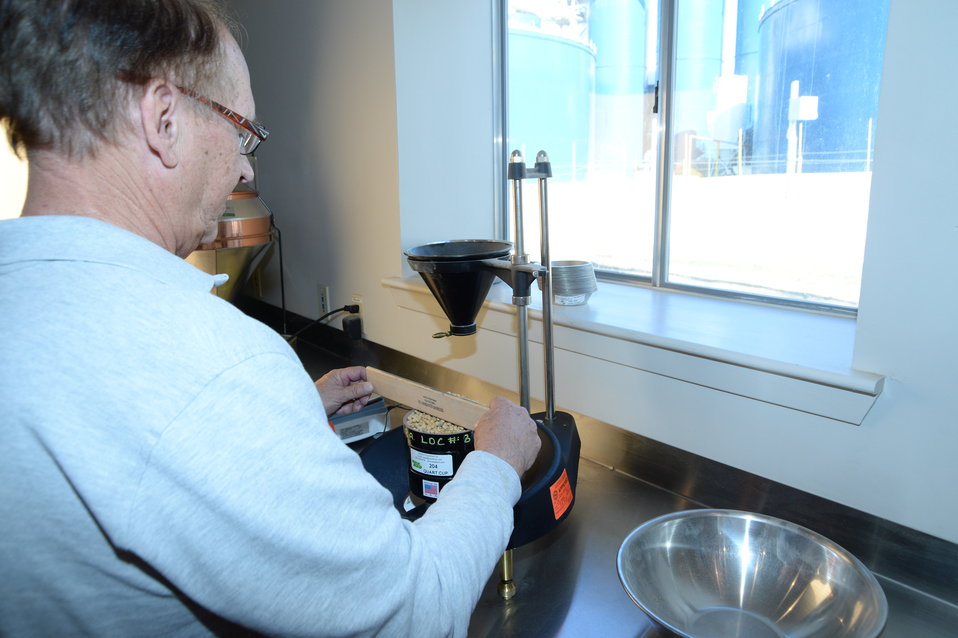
U.S. Department of Agriculture (USDA) Grain Inspection, Packers and Stockyards Administration (GIPSA) Federal Grain Inspection Service (FGIS) employee tests U.S. grain ready for export near the Port of New Orleans in New Orleans, LA on Tuesday, Nov. 19, 2013.